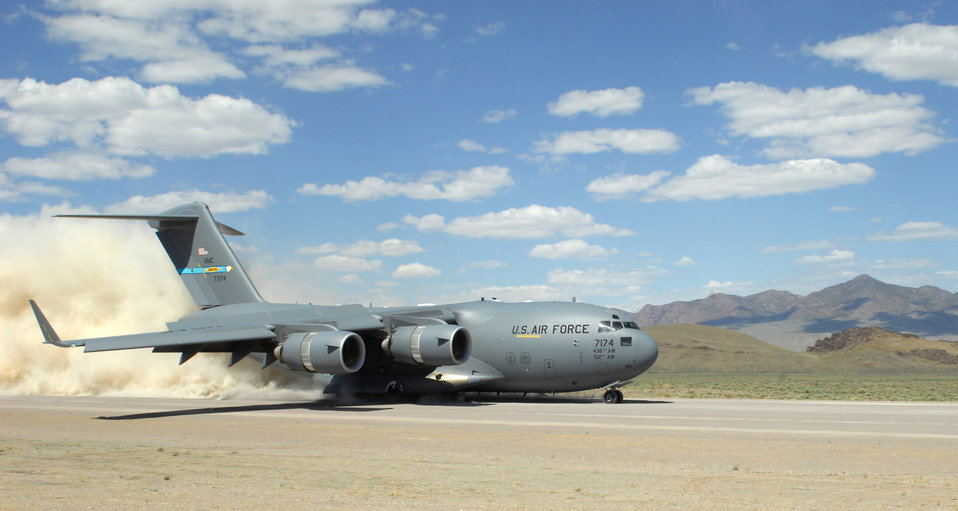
Testing mobility forces

During the short take off and landing phase of the Mobility Air Forces Exercise, a C-17 Globemaster lII lands on a dirt landing zone at the Nevada Test and Training Range near Nellis Air Force Base, Nev. The 29th Weapons Squadron provides advanced tactical training to C-130 Hercules aircrew selected to attend the Weapons School here. The six-month, graduate-level course culminates in a massive airlift mission, called the Mobility Air Forces Exercise. More than 30 airlift assets and hundreds of support personnel from across the Air Force participate in the biannual training exercise.